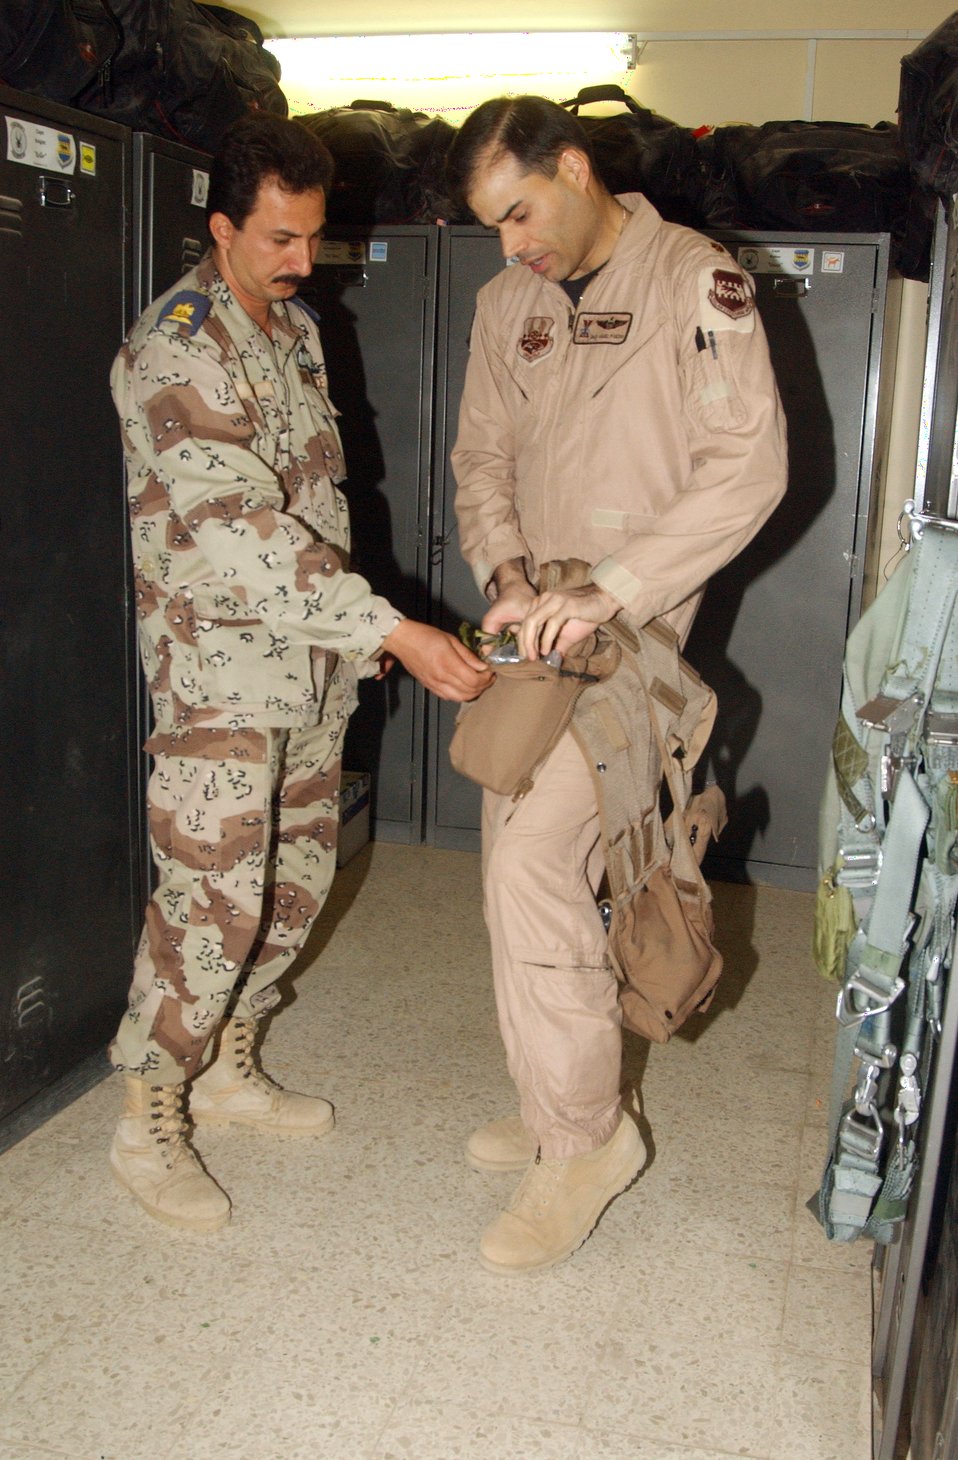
Iraqi pilot gets second look at F-16

BALAD AIR BASE, Iraq -- Maj. Jose Pinedo shows Iraqi air force Maj. Salam Shalaam some of the life support equipment American pilots wear. Major Pinedo is with the 421st Expeditionary Fighter Squadron here.